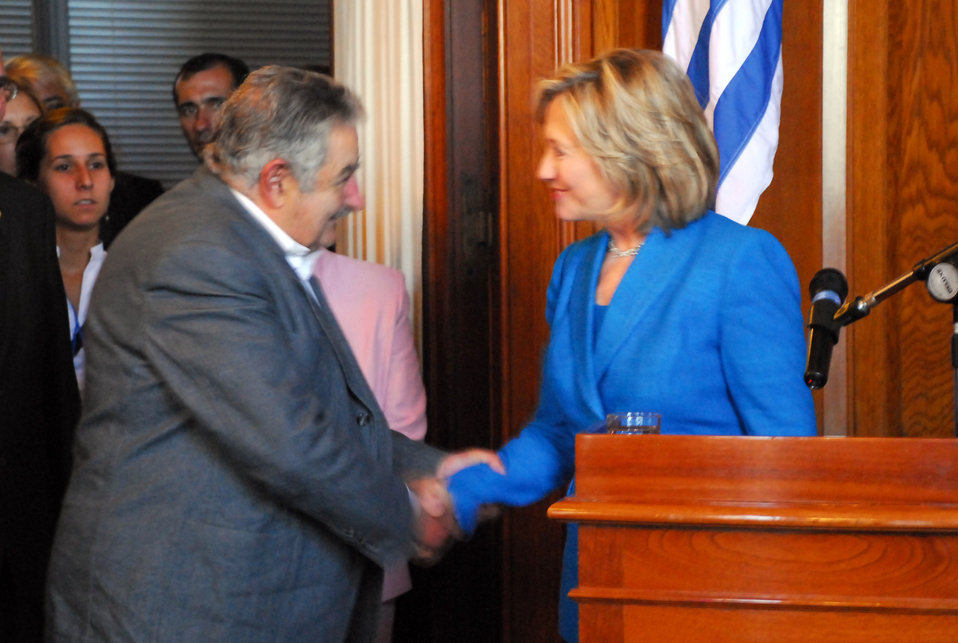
Secretary Clinton Meets With Uruguay President-Elect

U.S. Secretary of State Hillary Rodham Clinton delivers a statement after meeting with President Elect of Uruguay José Mujica at the Legislative Palace in Montevideo, Uruguay March 1, 2010.